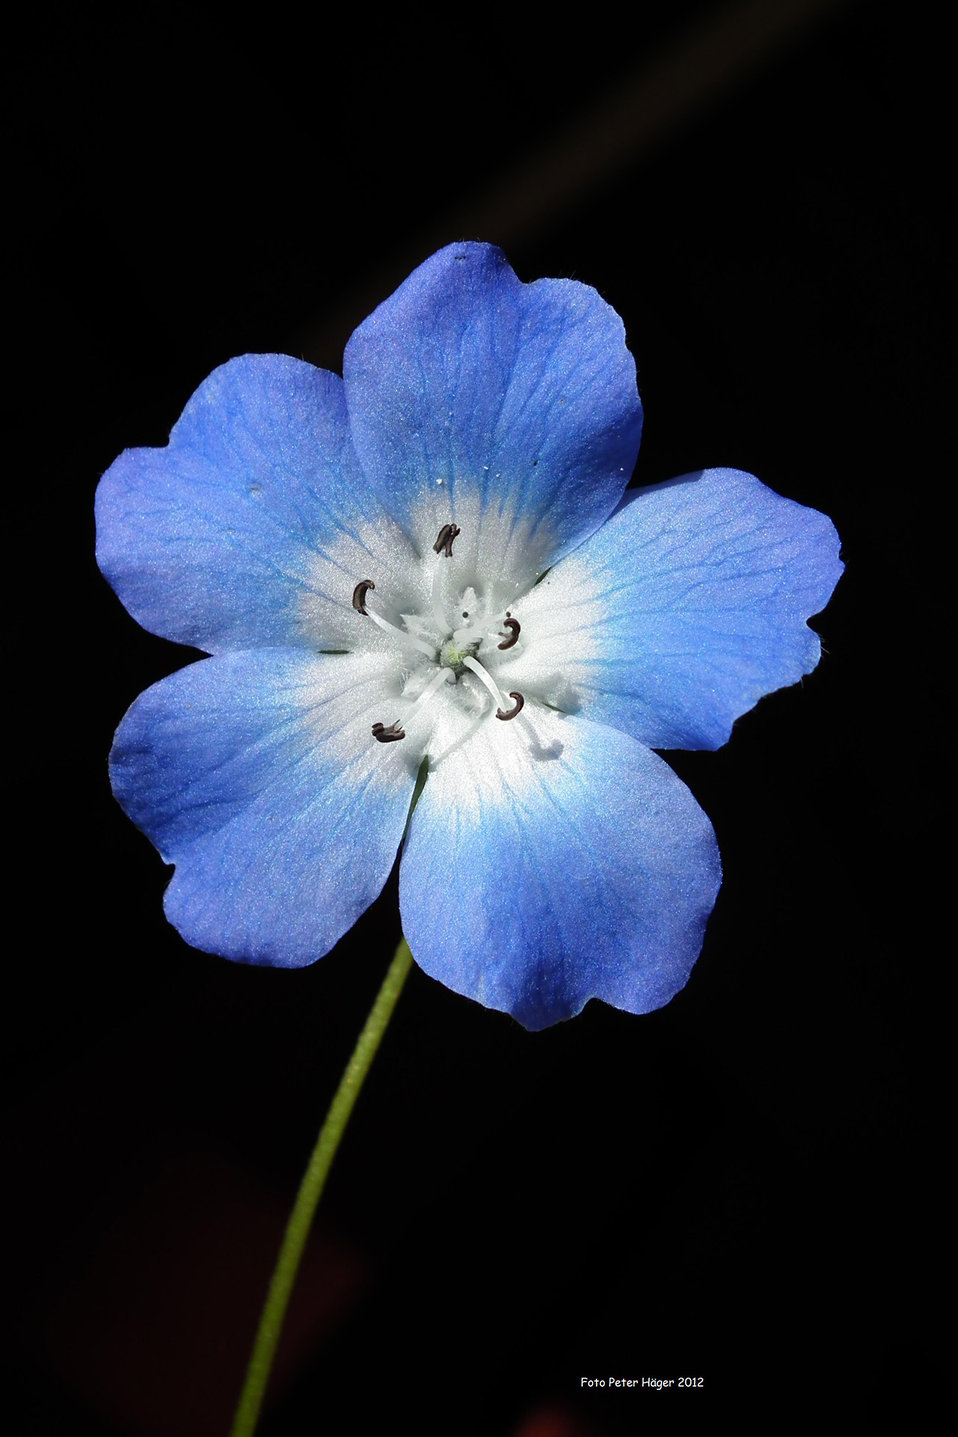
Blue flower

A beautiful blue flower.